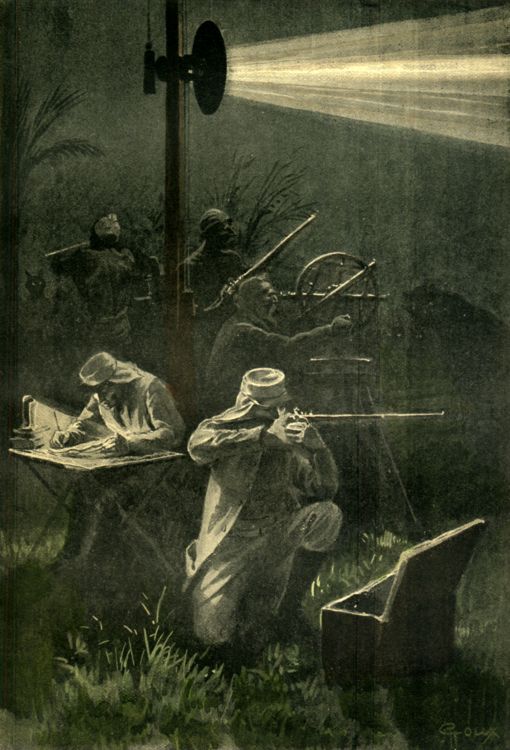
An illustration from Jules Verne's novel 'The Adventures of Three Englishmen and Three Russians in South Africa' (1870) drawn by Jules F√©rat. Polski: Ilustracja powie≈õci Juliusza Verne'a 'Przygody trzech Rosjan i trzech Anglik√≥w w po≈Çudniowej Afryce' (1870) autorstwa Julesa F√©rata. Fran√ßais†: Jules Verne: 'Aventures de trois russes et de trois anglais dans l‚ÄôAfrique australe' (1870), dessins par Jules F√©rat. Orginal description: Fran√ßais†: Sir John avait compris, le feu allait ouvrir un passage aux savants.